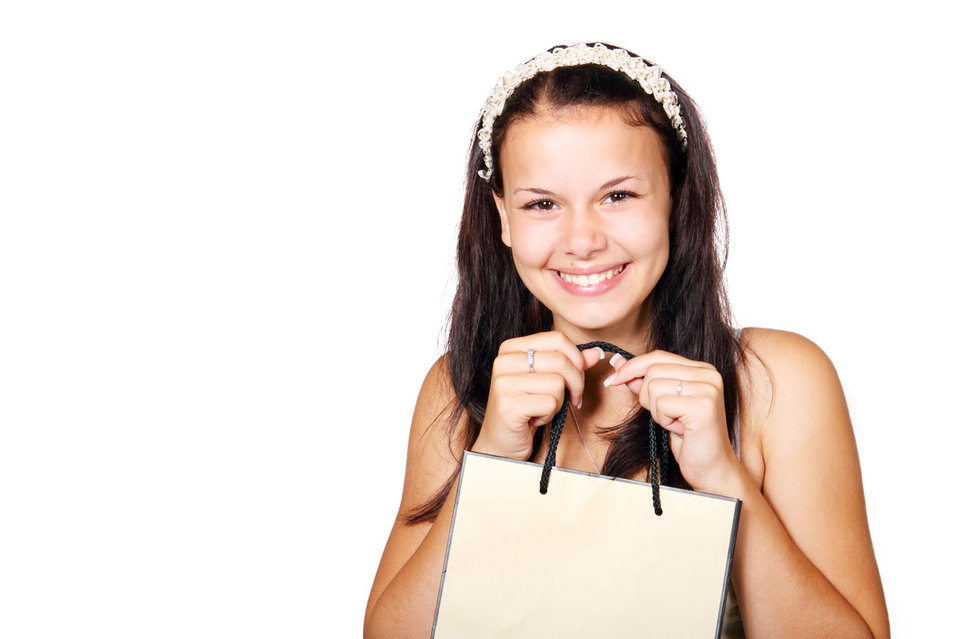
Girl shopping

Young woman with a shopping bag.